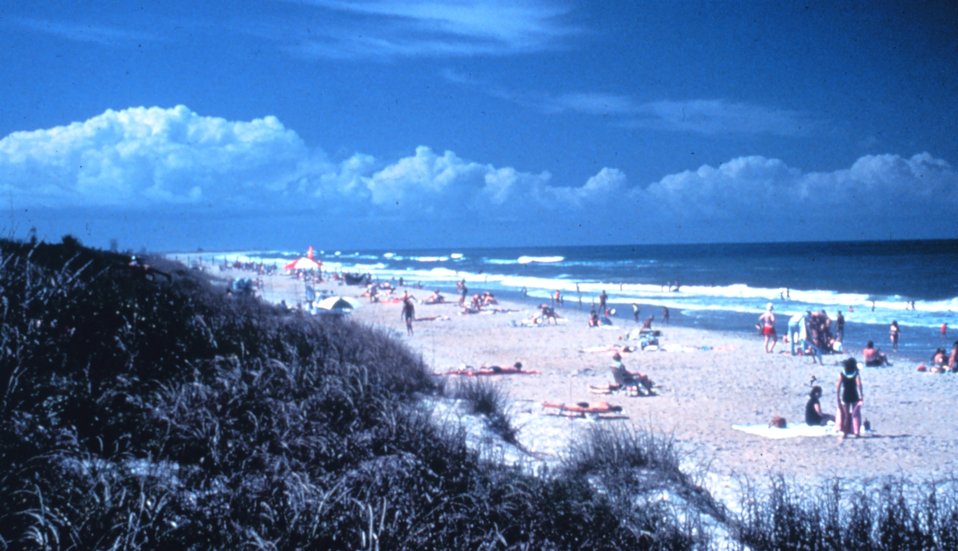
Canaveral National Seashore protects the cultural and natural resources within the park and provides recreational opportunities for park visitors.